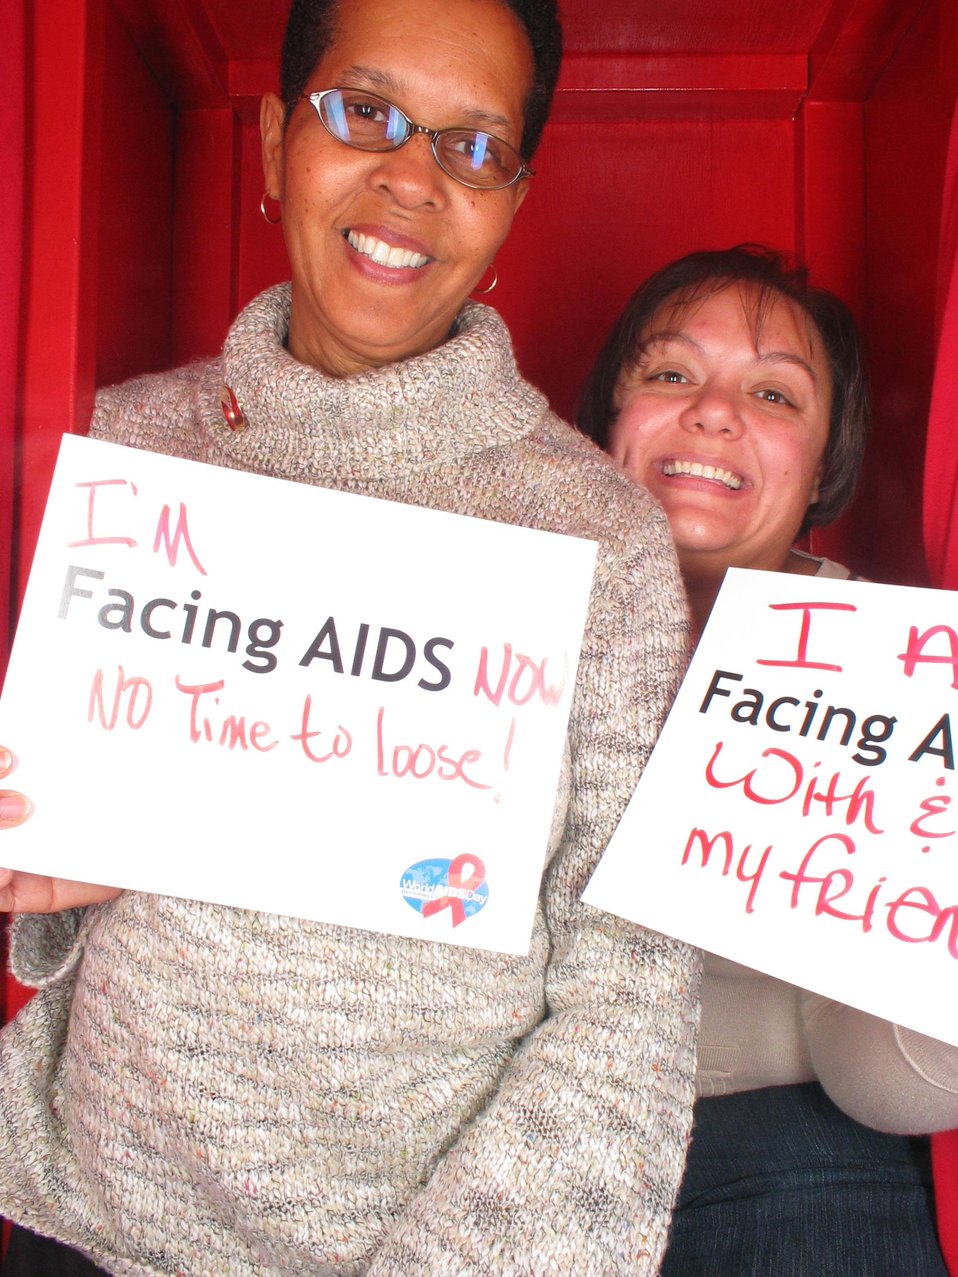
I'm Facing AIDS now. No time to loose.